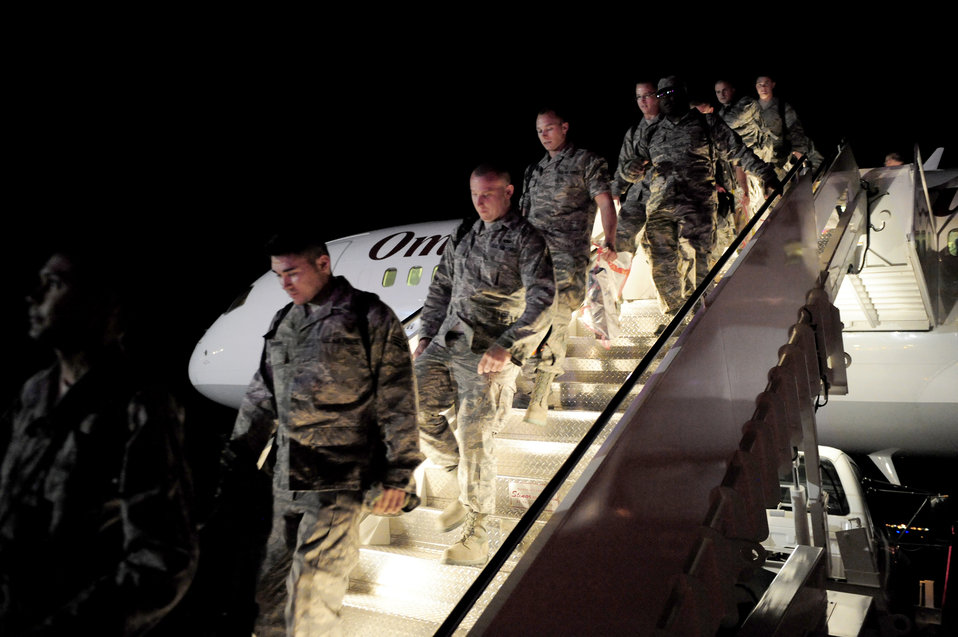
Welcome back

ELLSWORTH AIR FORCE BASE, S.D. - Airmen step off a plane to return from a deployment from Southwest Asia in support of Operations Iraqi and Enduring Freedom, July 28. More than 350 Airmen returned home, with two different arrival times during the day, and were greeted by Ellsworth leaders, their family, friends and co-workers.